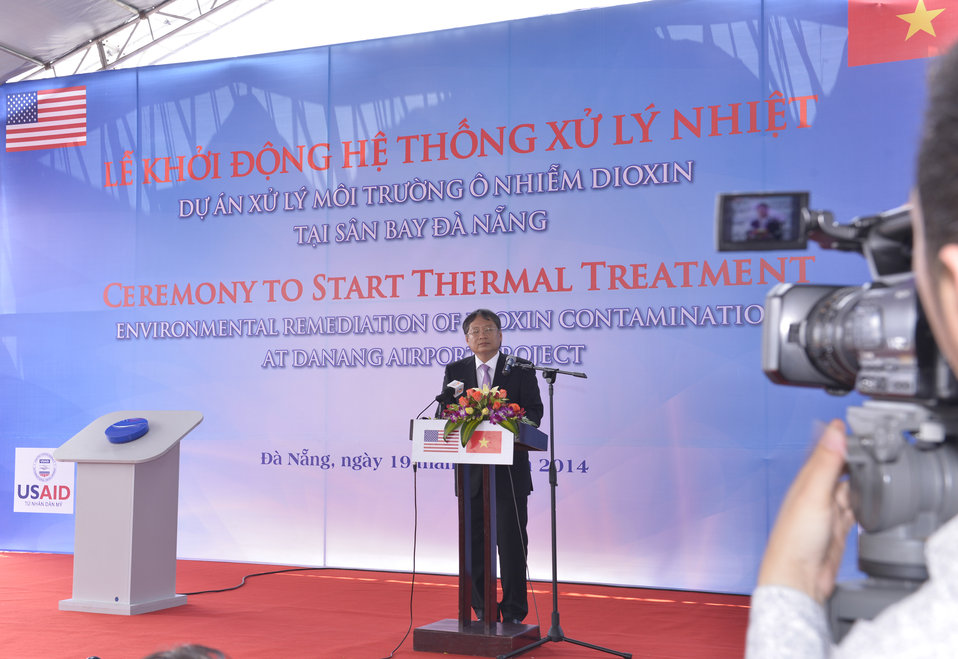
Vice Chairman of Danang’s People Committee Nguyen Ngoc Tuan speaks at the ceremony to turn on treatment system at Danang Airport

Danang, April 19, 2014.